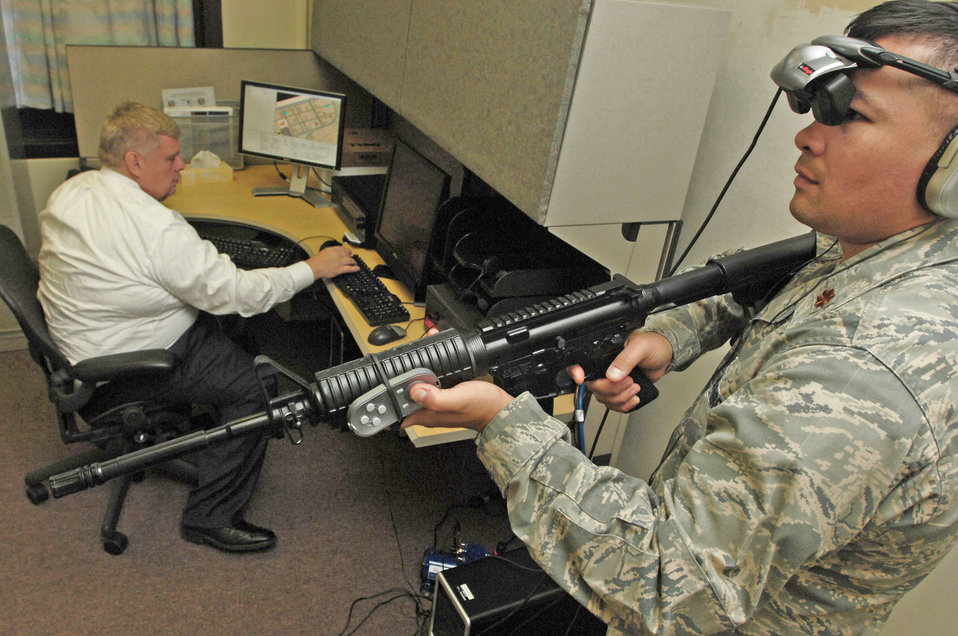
New PTSD Clinic uses virtual reality

Dr. Alan Maiers (left), the assistant chief of the Warrior Resiliancy Program at Wilford Hall Medical Center, Lackland Air Force Base, Texas, simulates a virtual reality city patrol Aug. 26 for Maj. Monty Baker, the Warrior Resiliancy Program director of research. The virtual reality program is designed to treat servicemembers who suffer from post traumatic stress disorder after returning from combat operations.